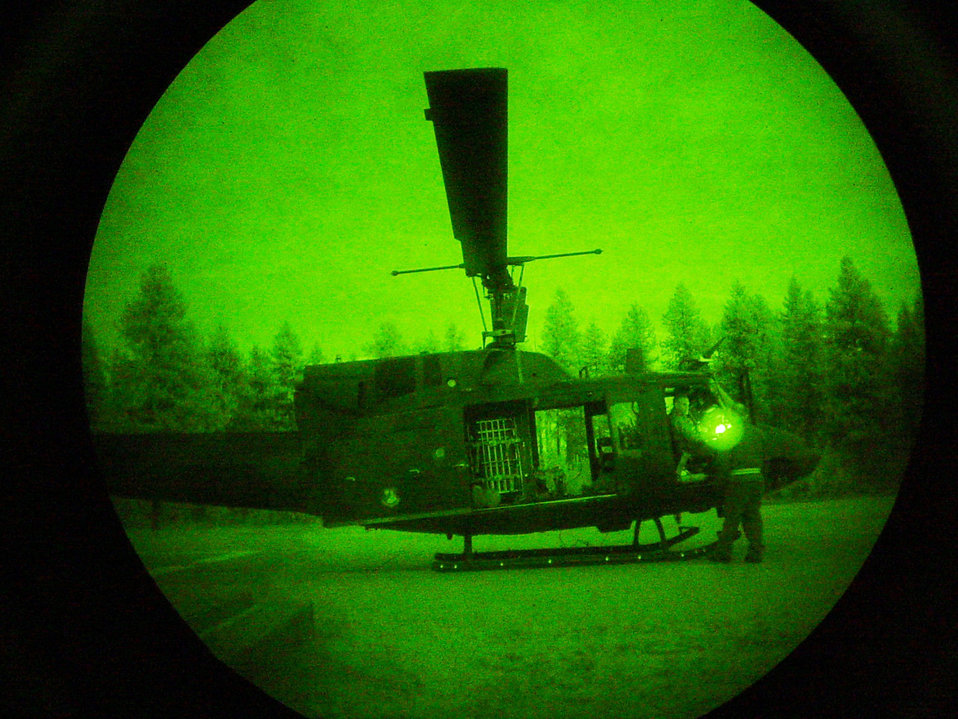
Fairchild Airmen rescue hikers

A UH-1N Huey is seen through pair of night-vision goggles June 26 in Washington. Airmen of the 36th Rescue Flight from Fairchild Air Force Base, Wash., rescued a hiker from Fort Lewis, Wash., who tumbled more than 1,000 feet down a mountain just west of Wenatchee, Wash.